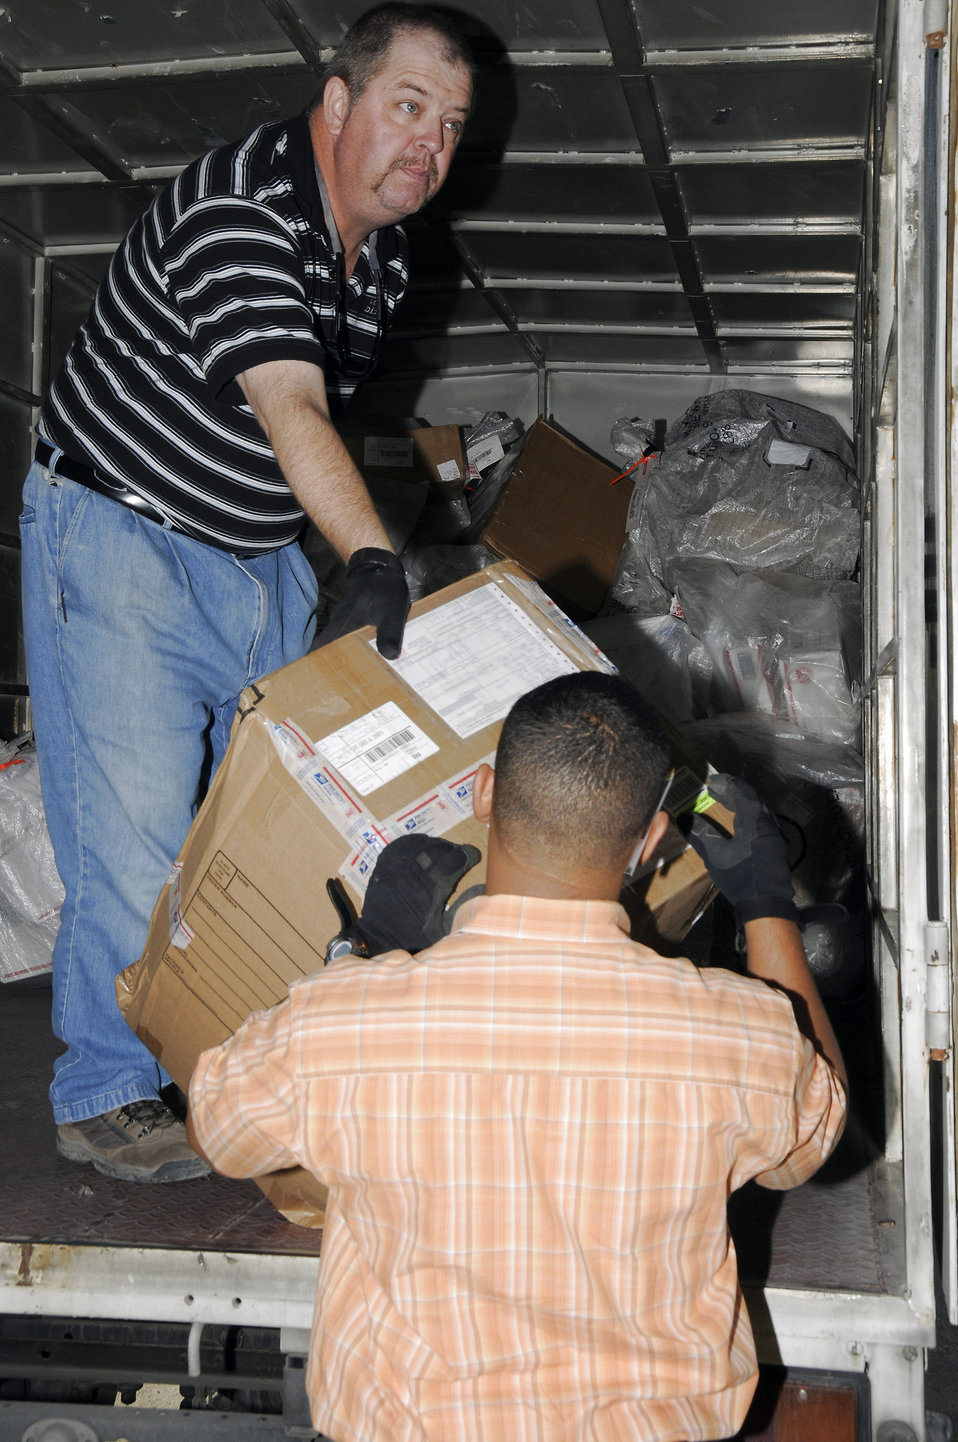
Letters, packages to Airmen increases during holiday season

Mike Ruzza off loads the daily mail truck to Oneris Barett while he inspects the package for damage Dec. 8 at an air base in Southwest Asia. Mr. Ruzza and Mr. Barett work for Alutiiq International Solutions LCC. This company is contracted to provide personnel and services for the 380th Air Expeditionary Wing Post Office. They are busy trying to keep the mail coming and going during the busy holiday season. Mr. Ruzza is a native of Tampa Bay, Fla., and Mr. Barett is from the Bronx, N.Y.